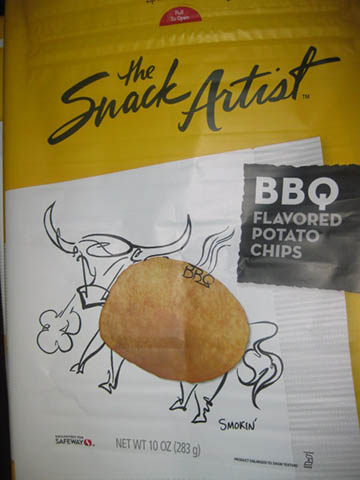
RECALLED – BBQ Potato Chips

October 10, 2013 – Product Recall – Barrel O’ Fun Snack Foods Co. Issues Allergy Alert and Recall of Safeway Snack Artist BBQ Potato Chips Due to Mislabeling and Undeclared Allergens.